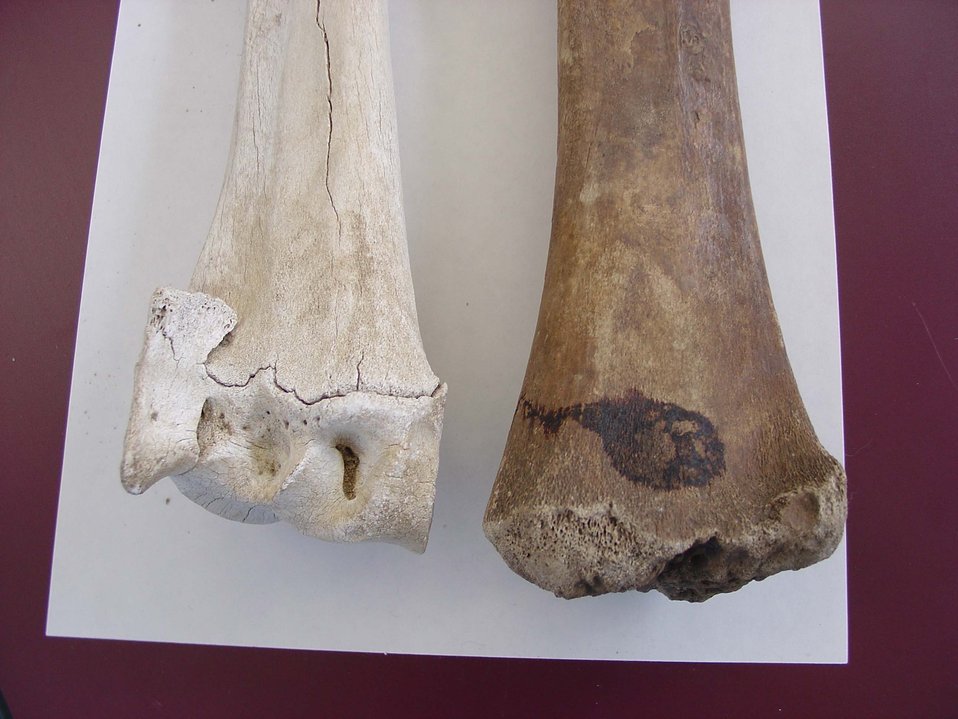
Bison bone size comparison to domestic cattle bone

Close-up of the ends of a Bison bone and a corresponding domestic cattle bone, comparing the difference in size.